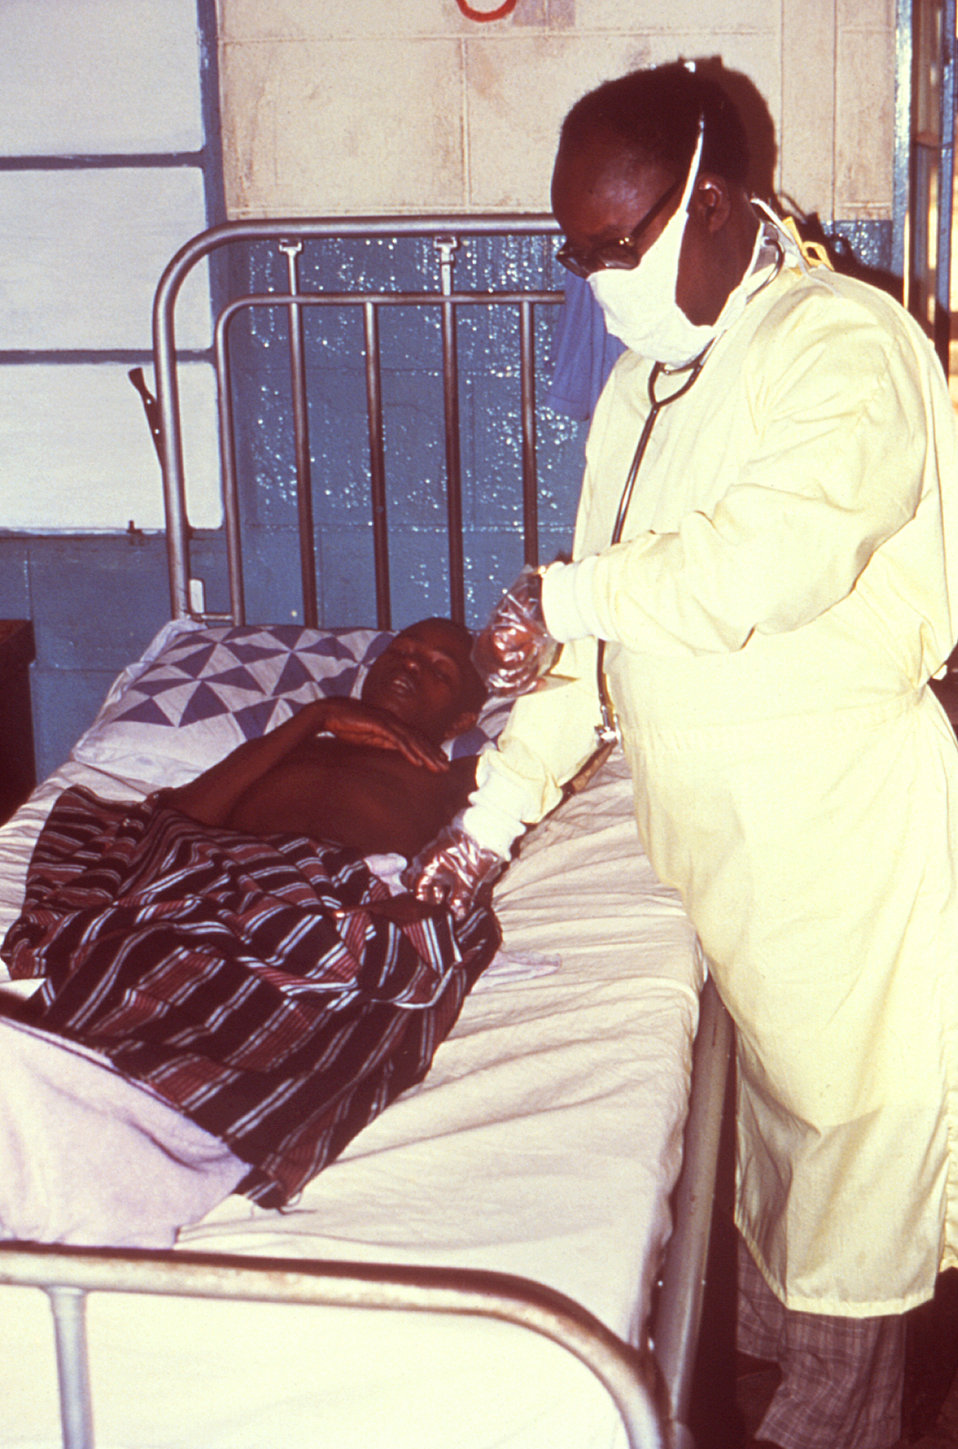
This 1977 image depicts Dr. Sandy as he examines a Lassa fever patient in the Segbwema, Sierra Leone clinic.